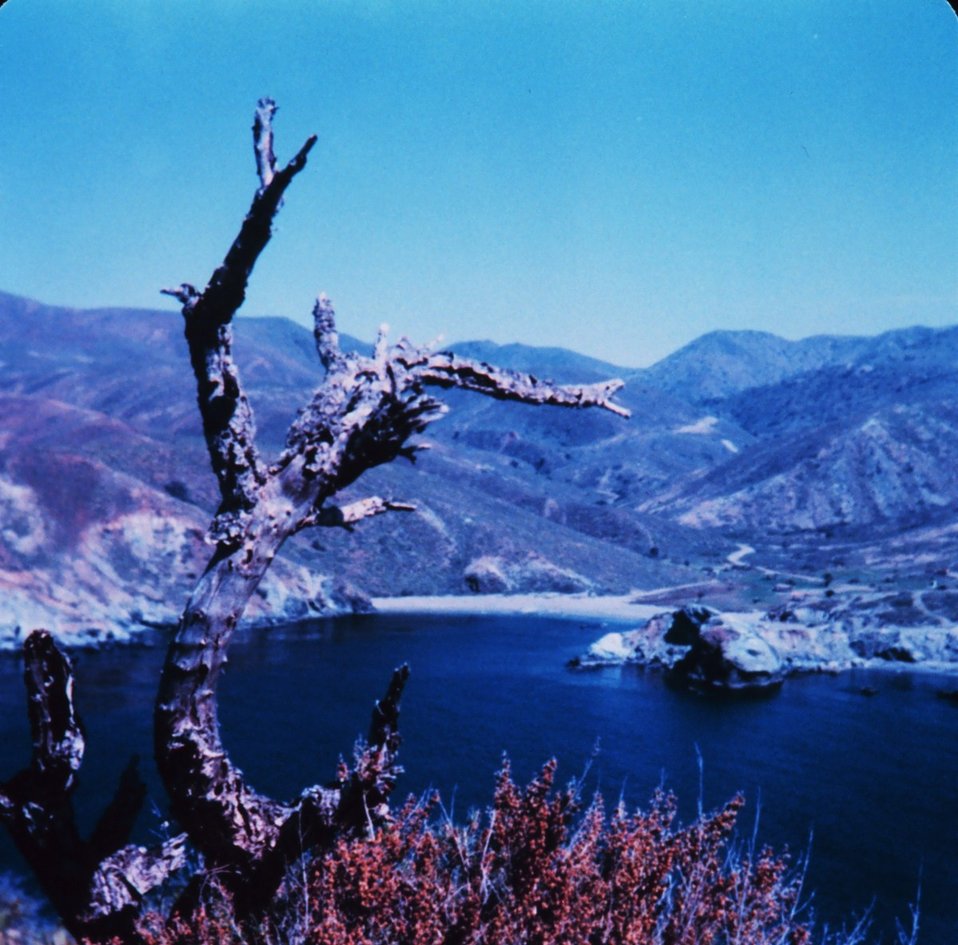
A quiet cove on the west side of Santa Catalina Island.